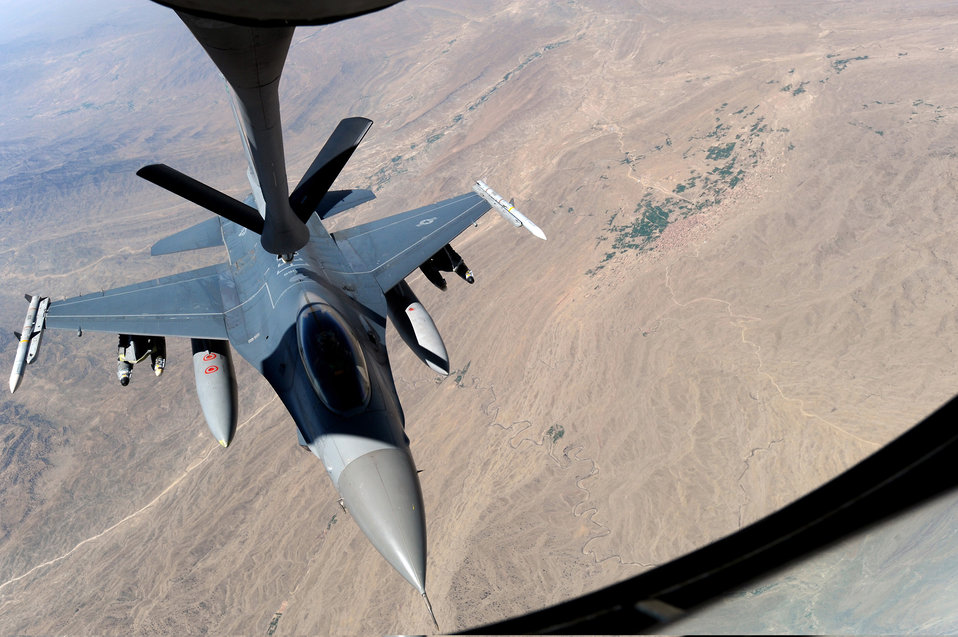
Refueling the fight

An F-16 Fighting Falcon receives fuel from a KC-135 Stratotanker May 8, 2011, above Afghanistan.